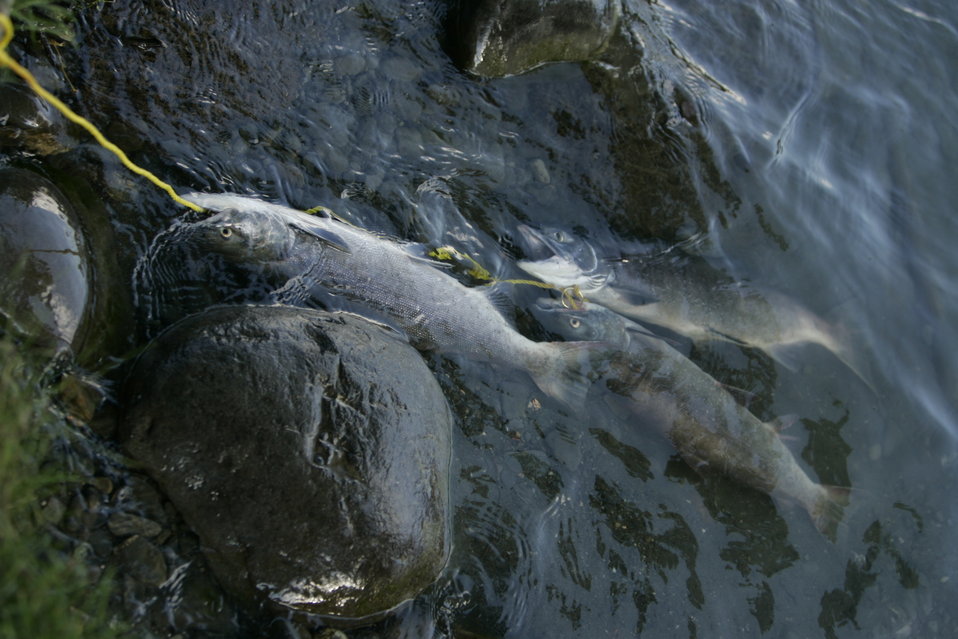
A Stringer of Reds Lay in the Icy Kenai

Anglers need to keep their catch cold and keep an eye out for bears looking for an easy meal too. The anglers who leave food, fish or backpacks on the banks of the sometimes attract bears which can cause a fatal encounter for the bear or angler.